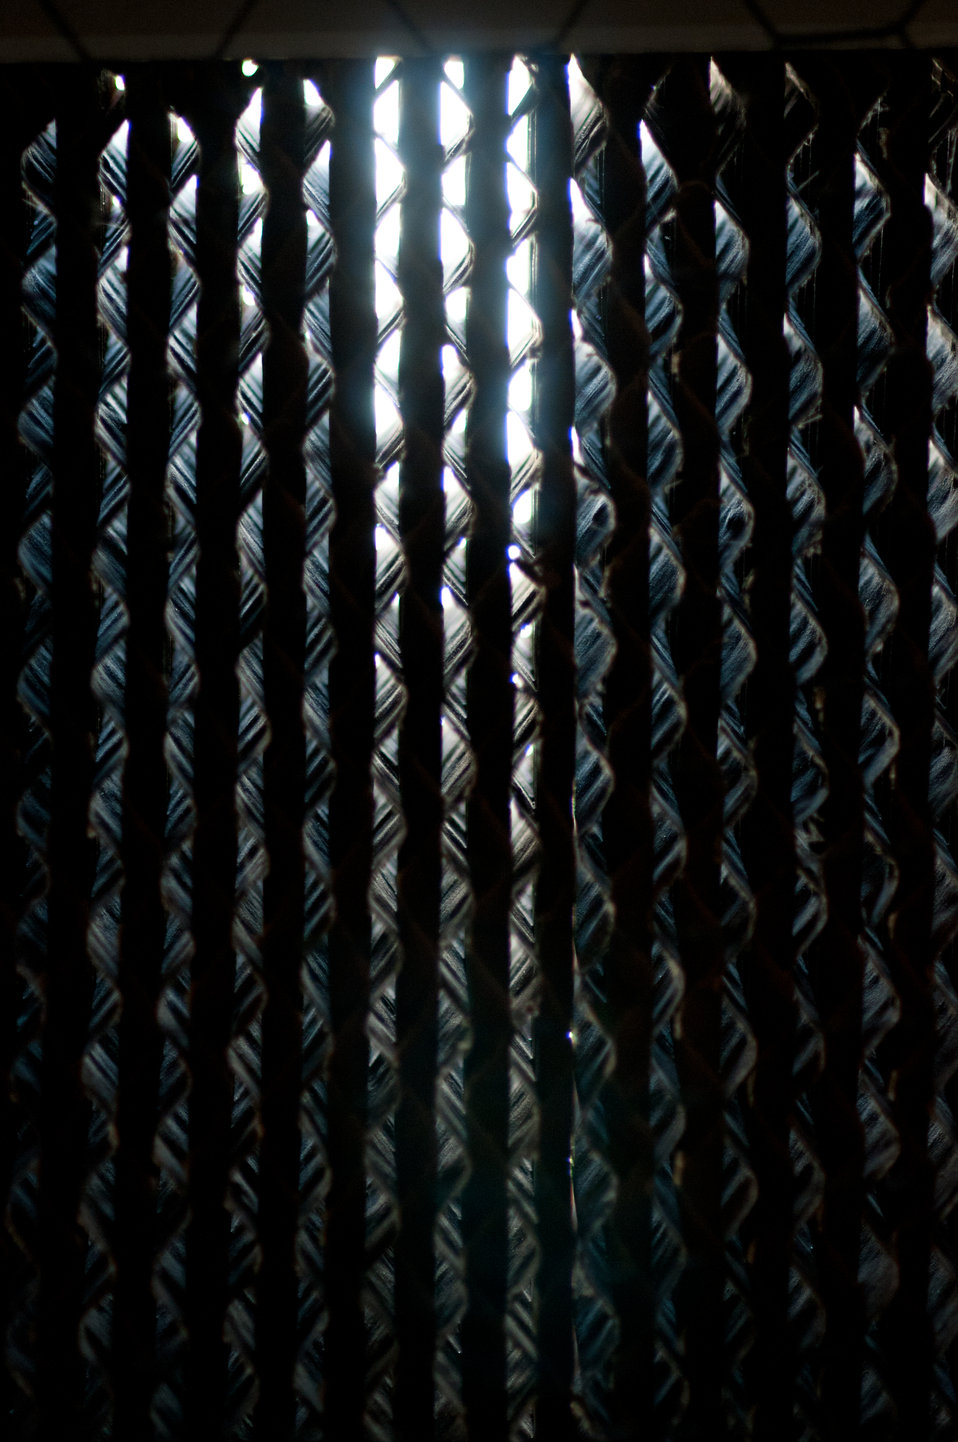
The evaporative cooling element at the Roxanne Molnar Farm, in Grantville, PA, recycles water through the elements to capture air drawn through it on Thursday, April 21, 2011. The Molnar’s were recipients of a $20,000 Rural Energy for America Program (REAP) grant. The money is a portion of the cost to modernize the second of two 40,000 chicken capacity chicken houses. Chickens need to be kept at a comfortable temperature to remain productive. New radiant heaters keep the chickens warm during Pennsylvania winters. On warm days, ceiling vents provide passive venting of heat out of the building; when chicken house temperatures are estimated to be above 90 degrees, fans come on, pulling air through water evaporator elements lowering air temperature down 10-15 degrees and flows along the chicken house's length, in effect a tunnel of cooled air. The benefits to the chickens are heat and excess moisture removal; minimized dust and odor; limits buildup of ammonia and carbon dioxide; and provides oxygen for respiration. All these systems are computer controlled allowing owner, Roxanne Molnar to run the farm by herself and raise two small boys Gavin (2) and Grant (5). Husband, Matthew works off the farm and frequently travels, so along with the demands of parenting and manually controlling fans, vents, and having to remove the 80,000 chickens from their feeders and moving them around to cool them was an increasingly daunting task. The computer controls of the new system automate many of the daylong tasks allowing the Molnar’s to run their family farm. USDA Photography by Lance Cheung.